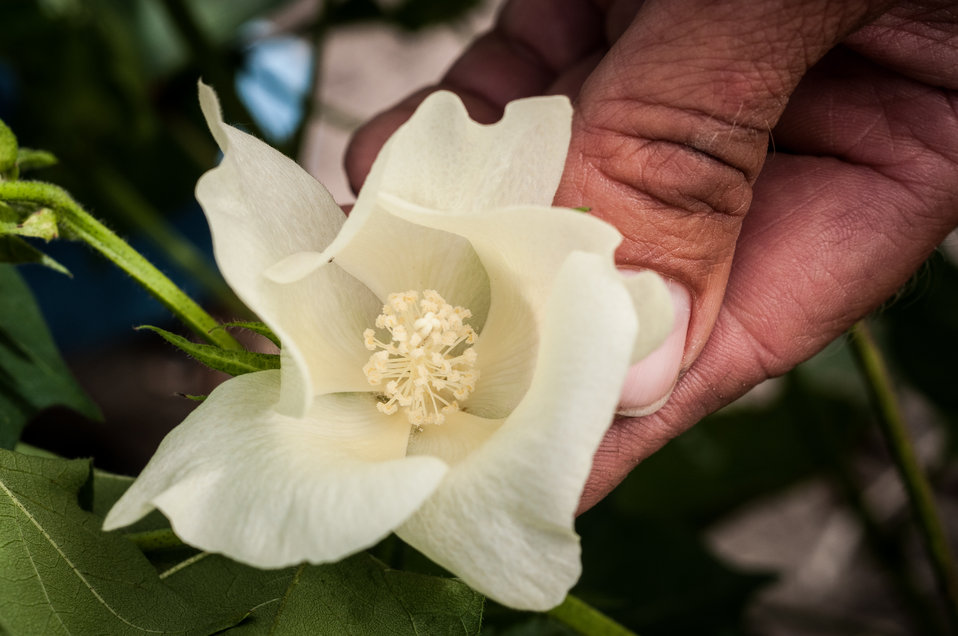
Michael Popp (pronounced Pope) shows cotton plants at various stages of development at Popp Farms 05 El Campo, TX on Jun. 20, 2013. Michael is a junior partner in the 2,400-acre operation, which grows cotton and milo (grain sorghum). The cotton flower starts as a square bud, then a white flower blossoms, turning red, then falls off leaving the boll to grow and eventually opens to reveal the cotton locks, ready to be harvested and processed in a cotton gin. Flowers first occur at the bottom and mature upwards along the plant. The farms are part of the United Agricultural Cooperative, Incorporated.